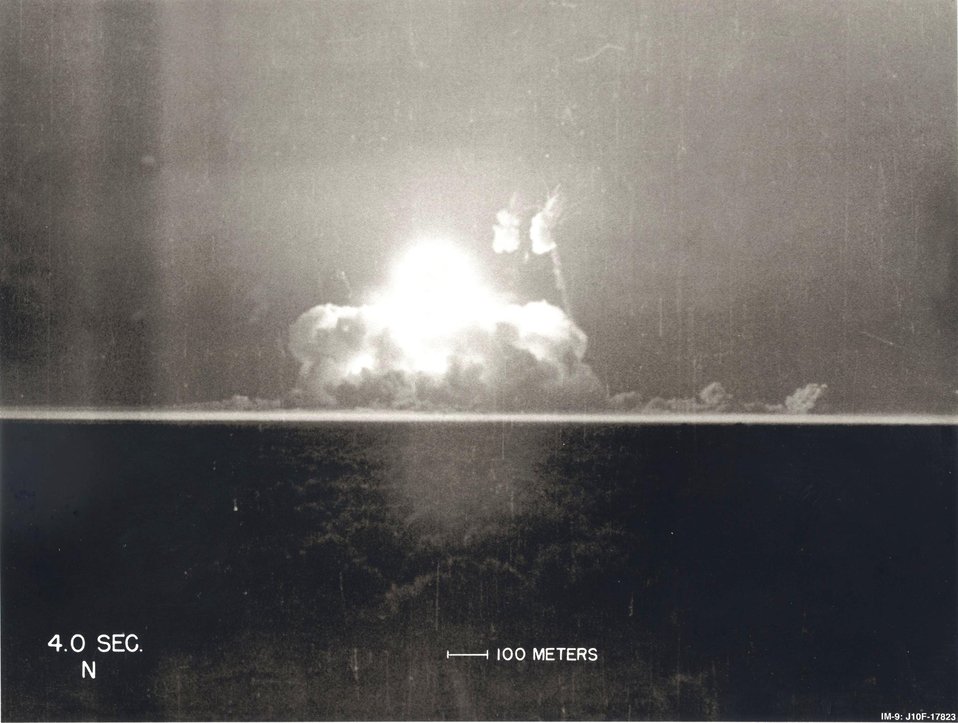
TRINITY AT 04.0